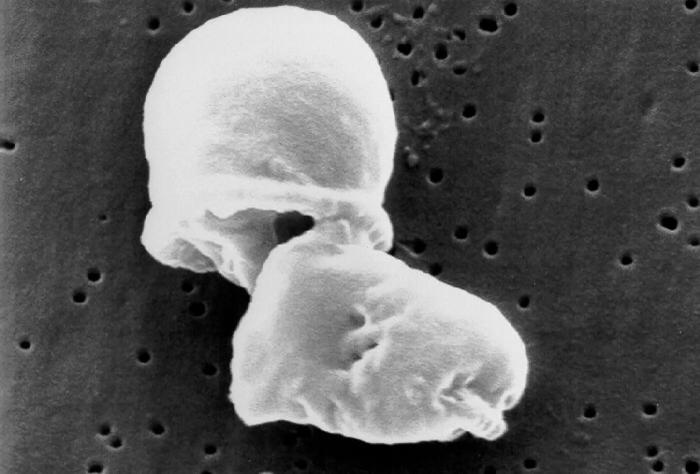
Scanning electron micrograph (SEM) of Malassezia sp. fungal organisms.